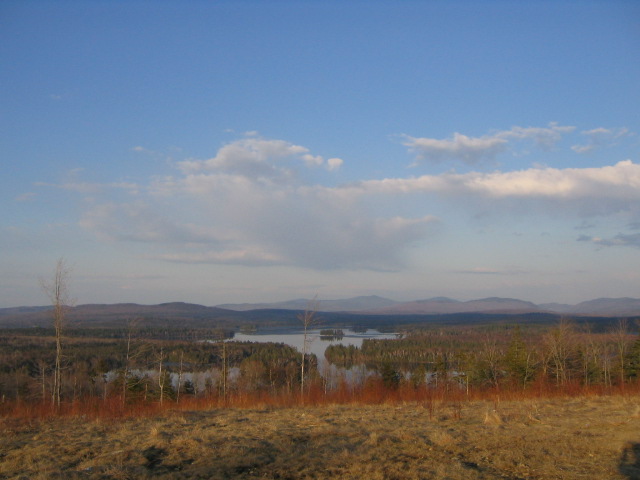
Umbagog National Wildlife Refuge